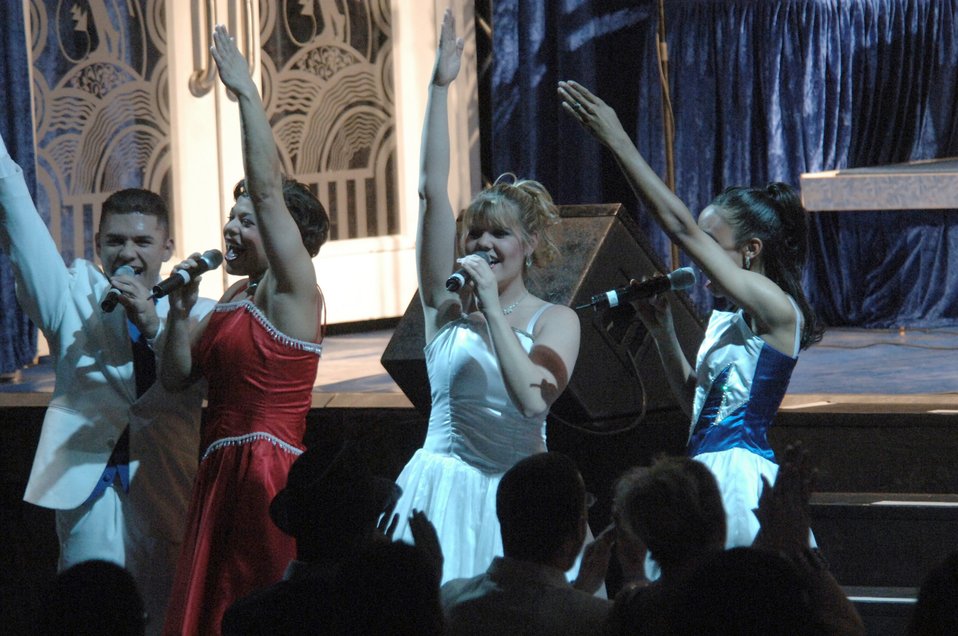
Tops in Blue

YOKOTA AIR BASE, Japan (AFPN) -- Members of the Air Force Tops in Blue entertainment troupe sing for several hundred people here. The group -- called the Air Force's